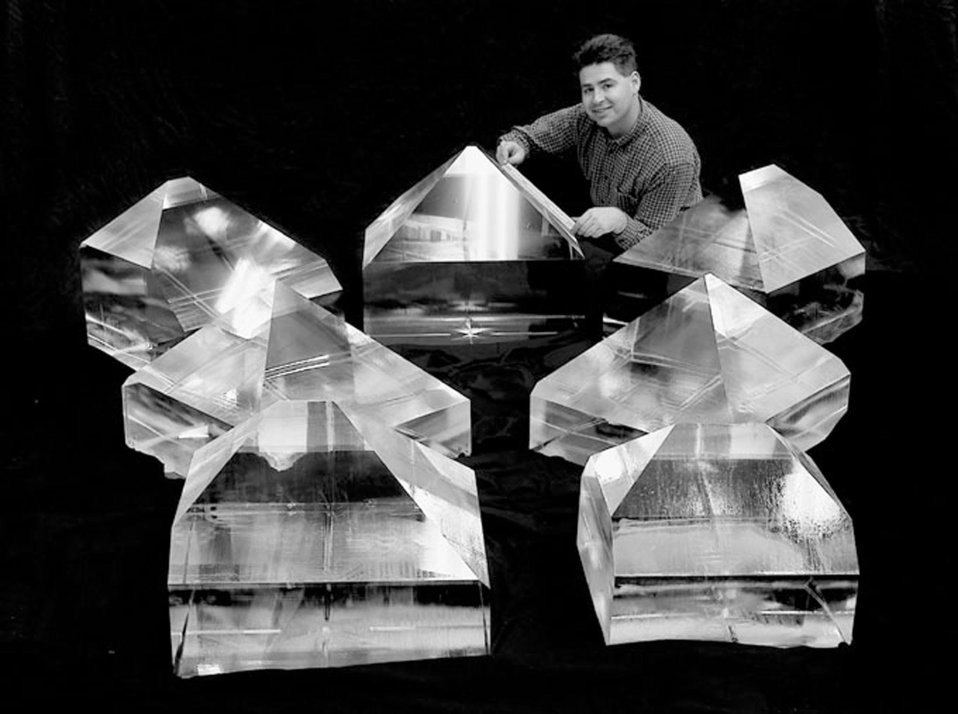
A LLNL researcher checks dimensions of the largest of the fast-growth crystals.

Pictured is an array of fast-growth crystals produced at the Lawrence Livermore National Laboratory, the largest weighing 701 pounds. The fast-growth crystals will be sliced and polished into 1/2 inch thick, 16 1/2 inch square plates for the national ignition facility. The crystal plates will be used to convert the laser's infrared light beams to ultraviolet light just before the beams strike the laser target.